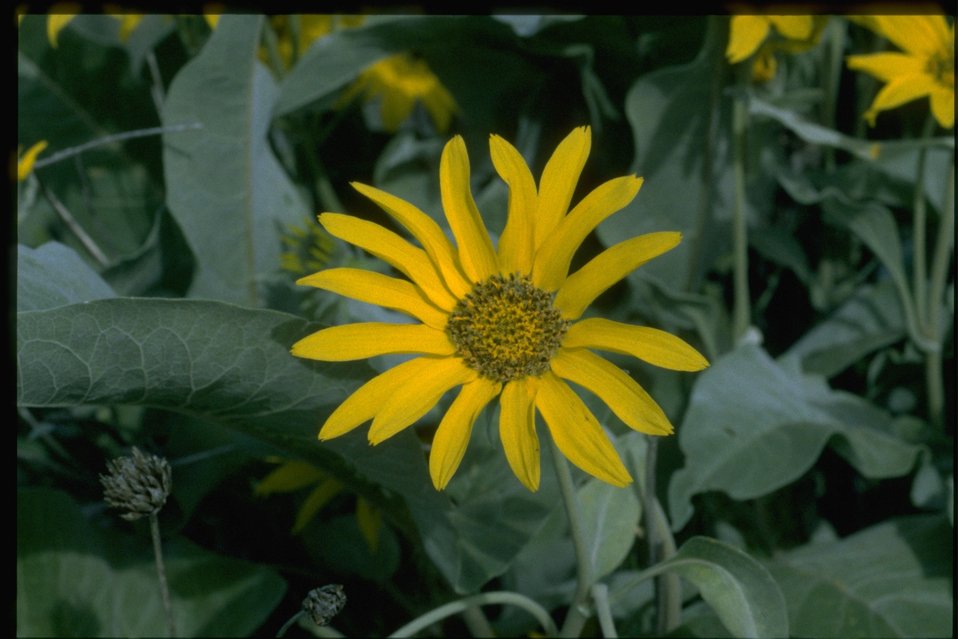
Closeup shot of Arrowleaf Balsam Root (Balsamorhiza sagittata).